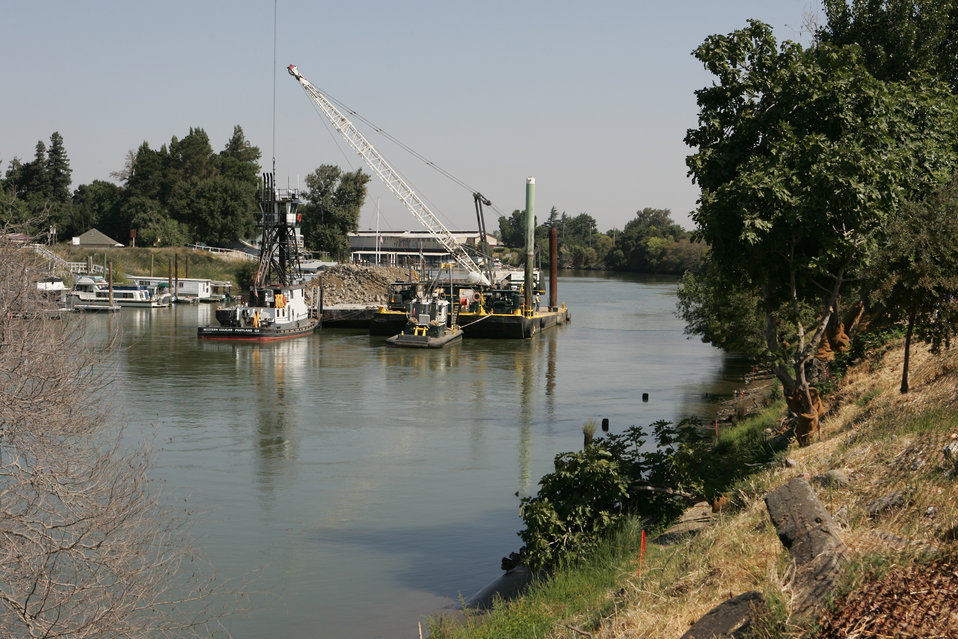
WALNUT Grove,Calif.(Sept.7,2006)--Levee repair by the Sacramento District Corps of Engineers on the Sacramento River in the delta town of Walnut Grove.The U.S. Army Corps of Engineers, Sacramento and San Francisco Districts, has multiple studies and projects addressing the mission areas of Ecosystem Restoration, Flood Risk Management, Navigation, and Watershed Planning within the Delta region. The study boundaries and mission areas of these ongoing projects sometimes coincide, complicating planning and coordination efforts. In addition to the projects undertaken by the Corps, numerous other Federal, State, and local efforts are underway. The key component to the success of each of these initiatives will involve sharing of information, cooperation, collaboration, and partnership.